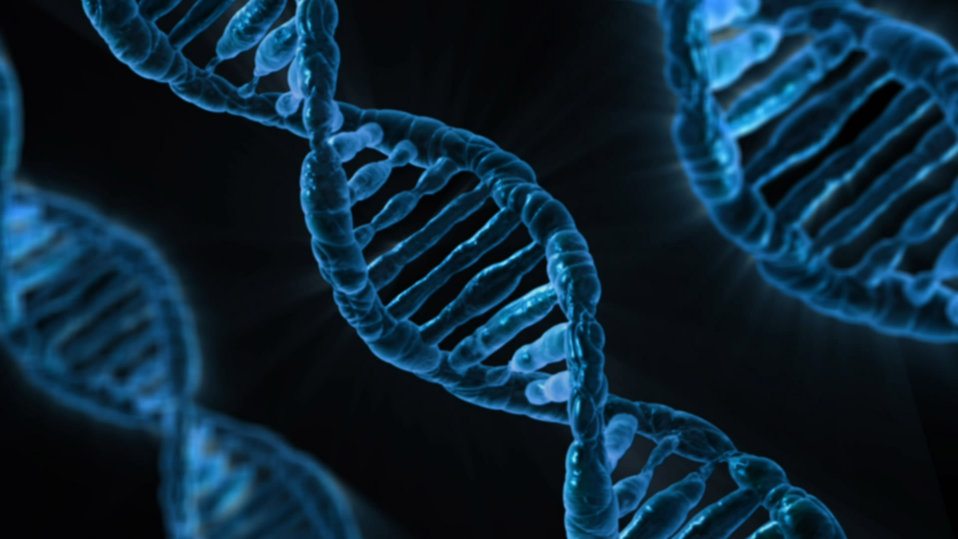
Structure of dna

View of the structure of dna.